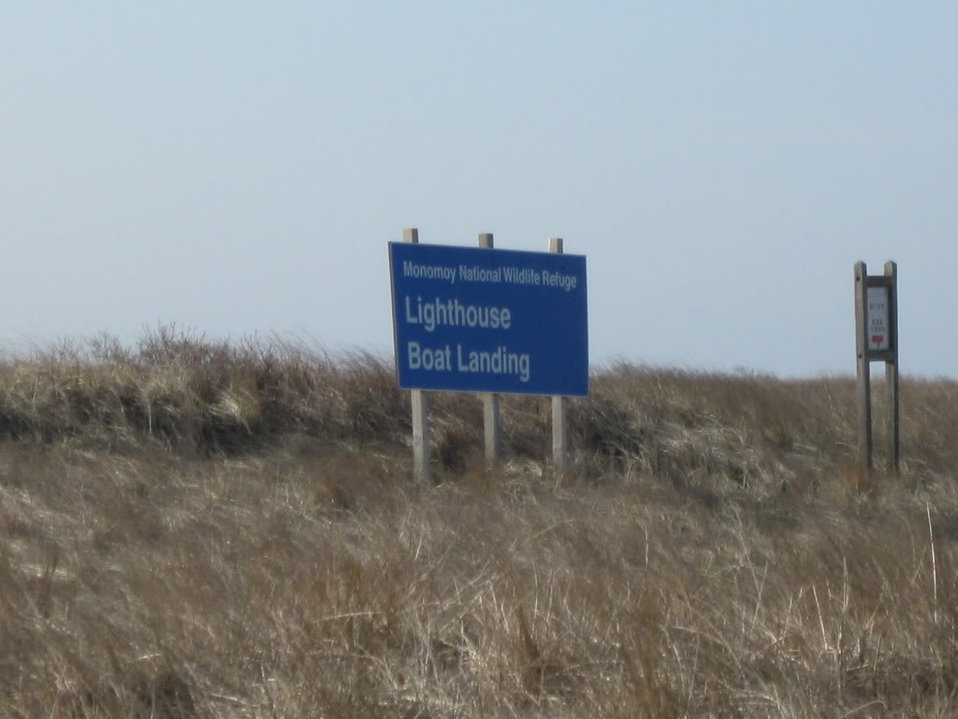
Lighthouse boat landing at Monomoy National Wildlife Refuge

Credit: Zachary Cava/USFWS

Monomoy National Wildlife Refuge is part of the Eastern Massachusetts National Wildlife Refuge Complex.